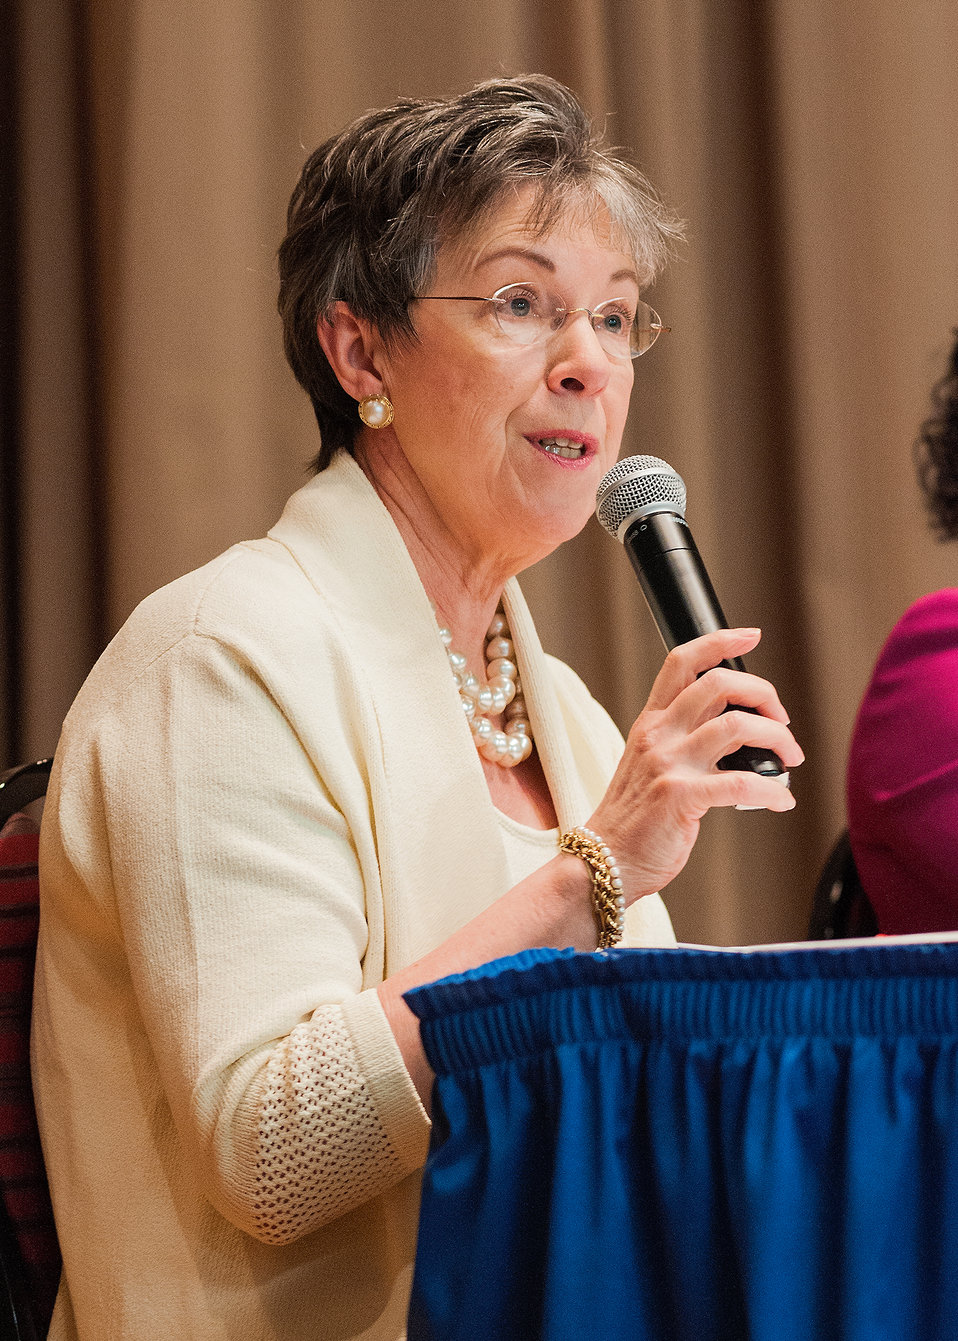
Agriculture Under Secretary, Research, Education and Economics (REE) Dr. Katherine Wotecki was one of four panel members at the USDA Office of the Chief Information Officer’s (OCIO) National Women’s History Month celebration at the Jefferson Auditorium in Washington, D.C. on Thursday, Mar. 14, 2013. The theme of this year’s celebration is, “Recognizing American Women’s Outstanding Contributions to the Field of Science, Technology, Engineering and Mathematics,” commonly referred to as STEM. Each panel member answered four questions: Who in History was a good role model? What were your biggest hurdles being in Science, Technology, Engineering and Mathematics (STEM)? And for women today what is your single piece of advice? All panel members mentioned setting professional and personal goals, strength of family and loving their career choices.